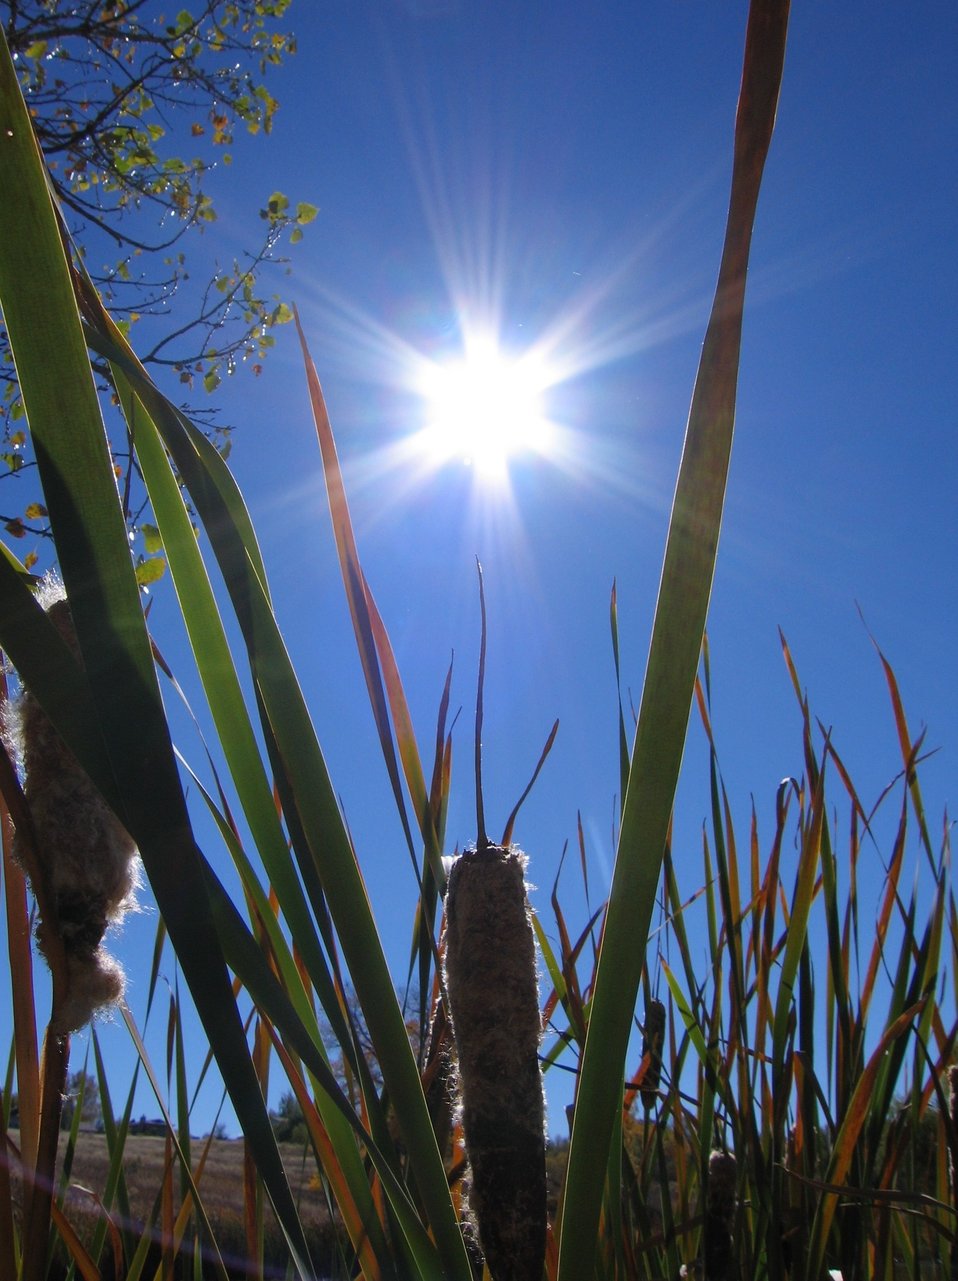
Cattails Sun